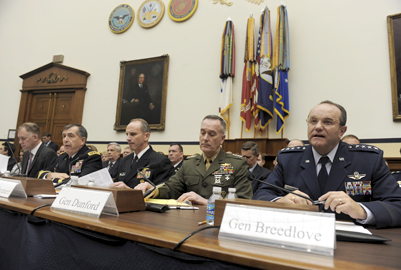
HASC Hearing on Efficiencies in DoD

(From right) Air Force Vice Chief of Staff Gen. Philip Breedlove, Vice Commandant of the Marine Corps Gen. Joseph Duford, Vice Chief of Naval Operations Adm. Jonathan Greenert, Army Vice Chief of Staff Gen. Peter Chiarelli and Deputy Secretary of Defense William Lynn III listen to opening comments during the House Armed Services Committee hearing on efficiencies in the Department of Defense on Capitol Hill Jan. 26, 2011, in Washington.